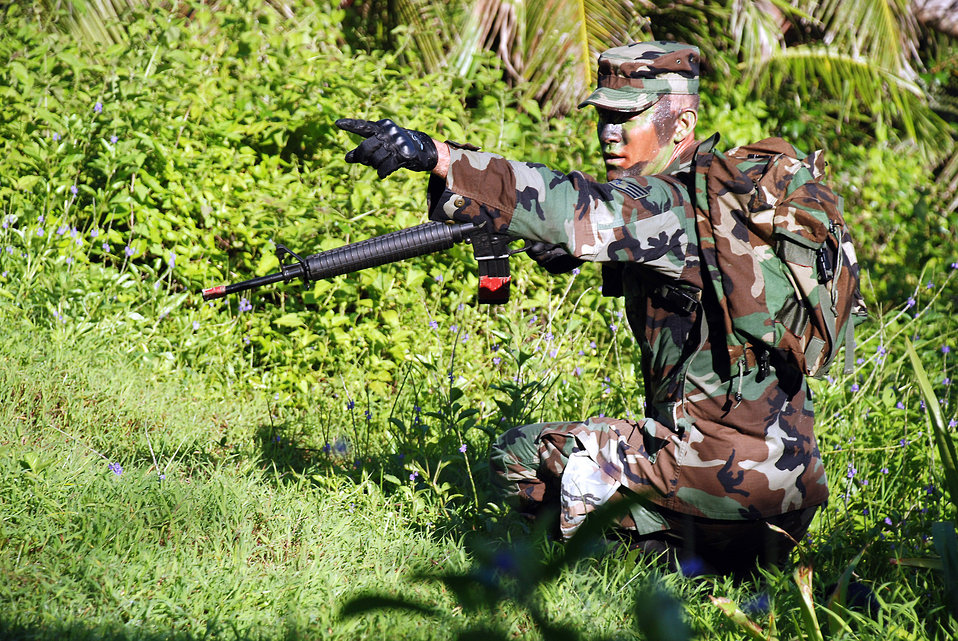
Stop right there!

Staff Sgt. Ian Powell engages simulated hostile forces at a